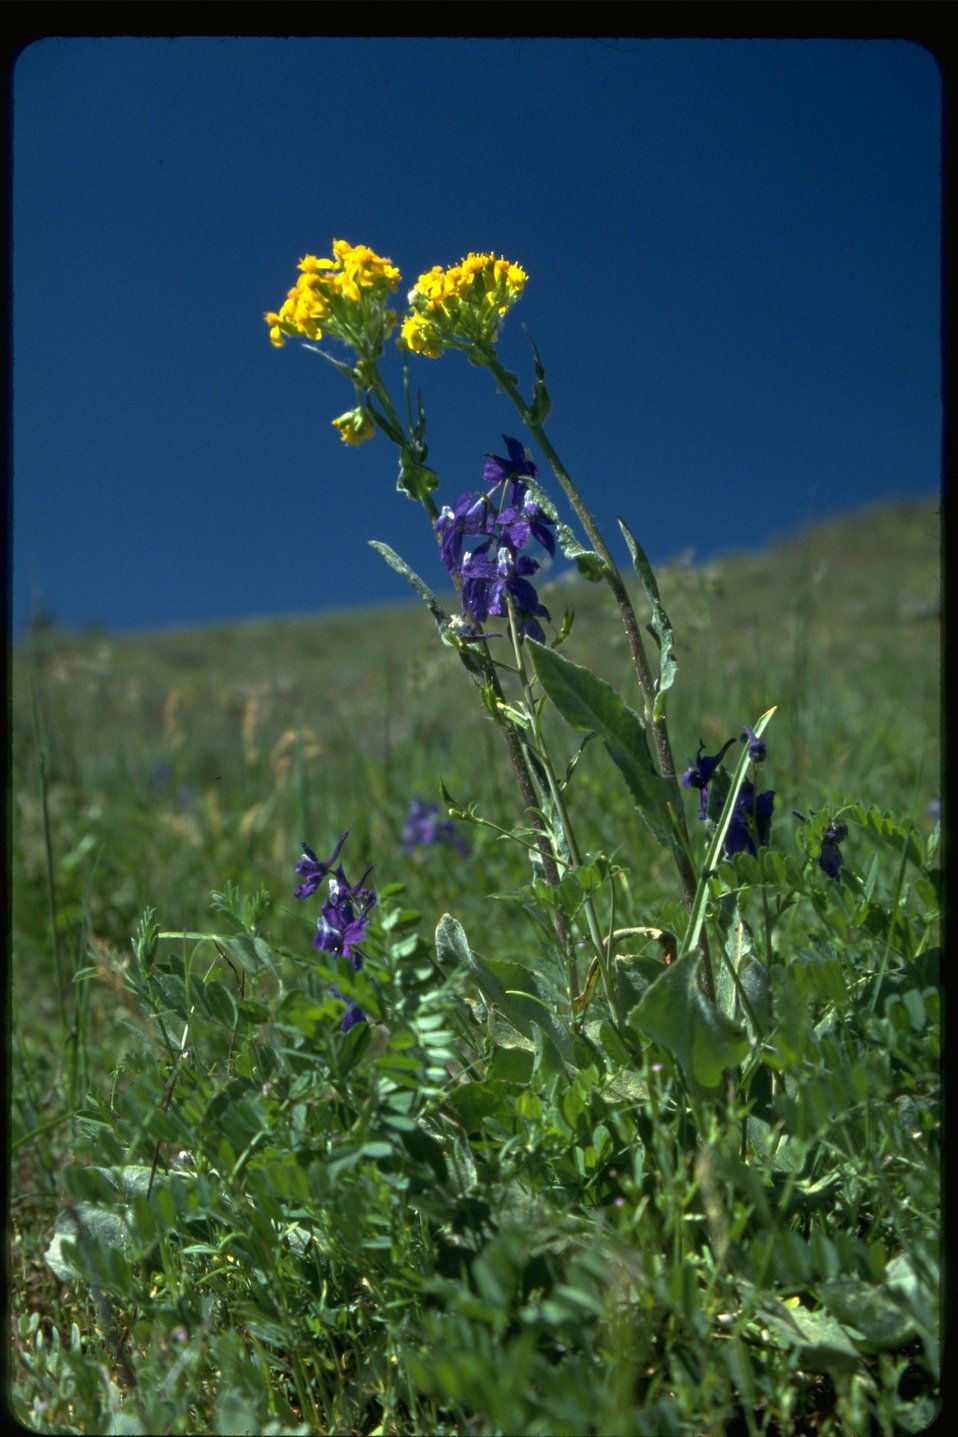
Medium shot of Western Groundsel and Penstemon wildflowers.